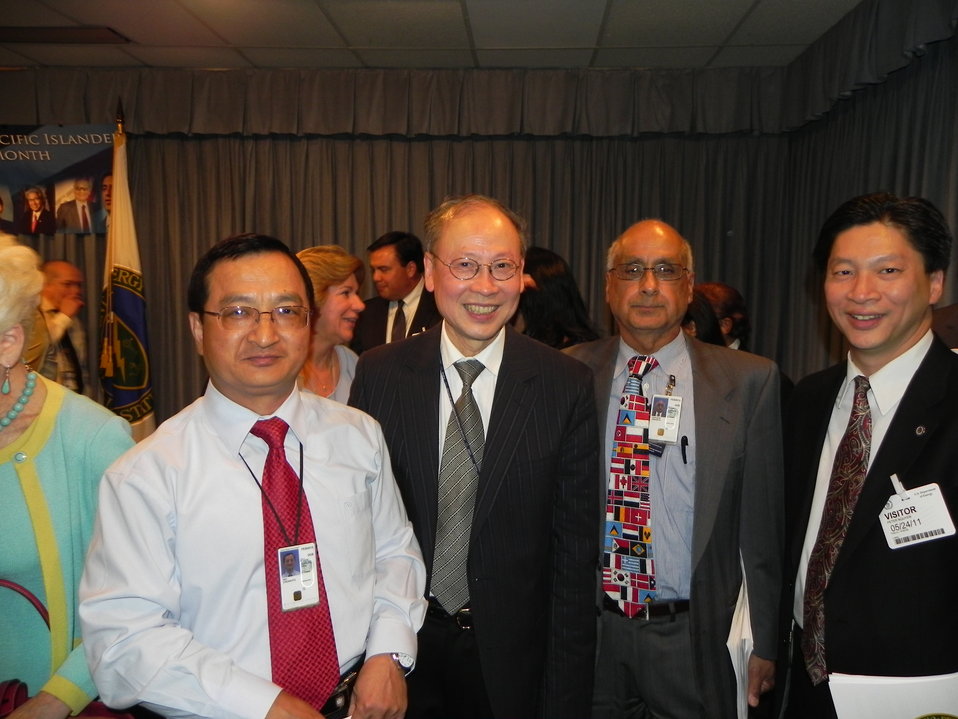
AAPI month pic